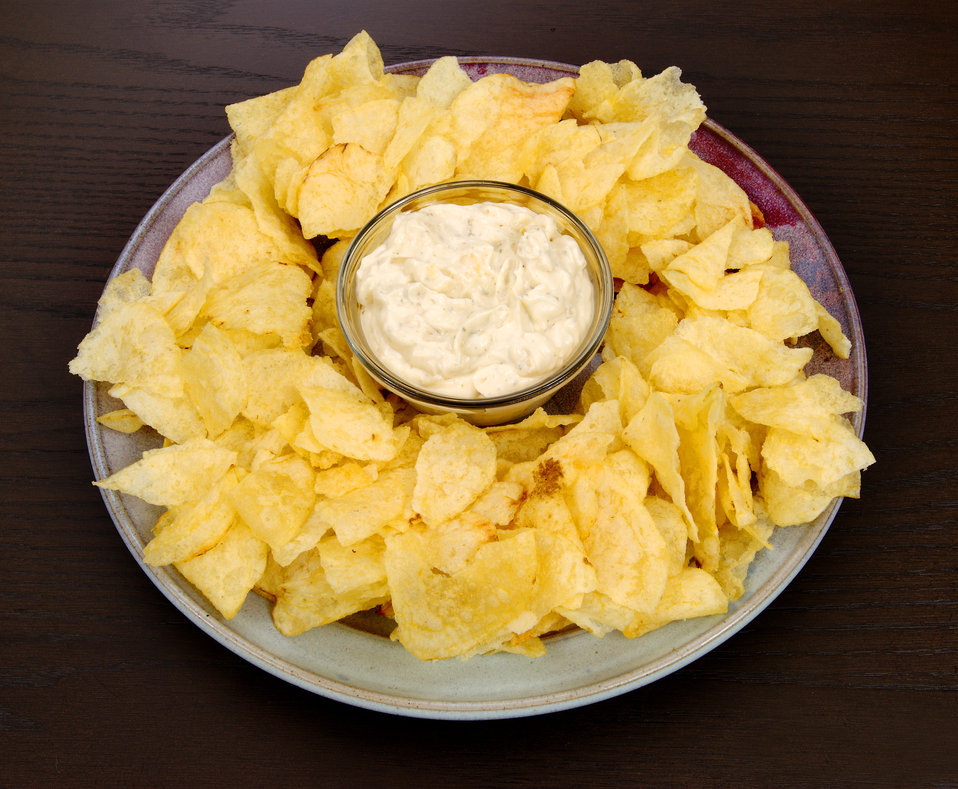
Though at first glance, this appears to be your usual dish of potato chips and dip, it has been modified to be a healthier version. The dip is made with homemade mayonnaise, horse raddish, and very little sea salt. The chips, though fried, are made with monounsaturated fat instead of saturated fat, and are unsalted.